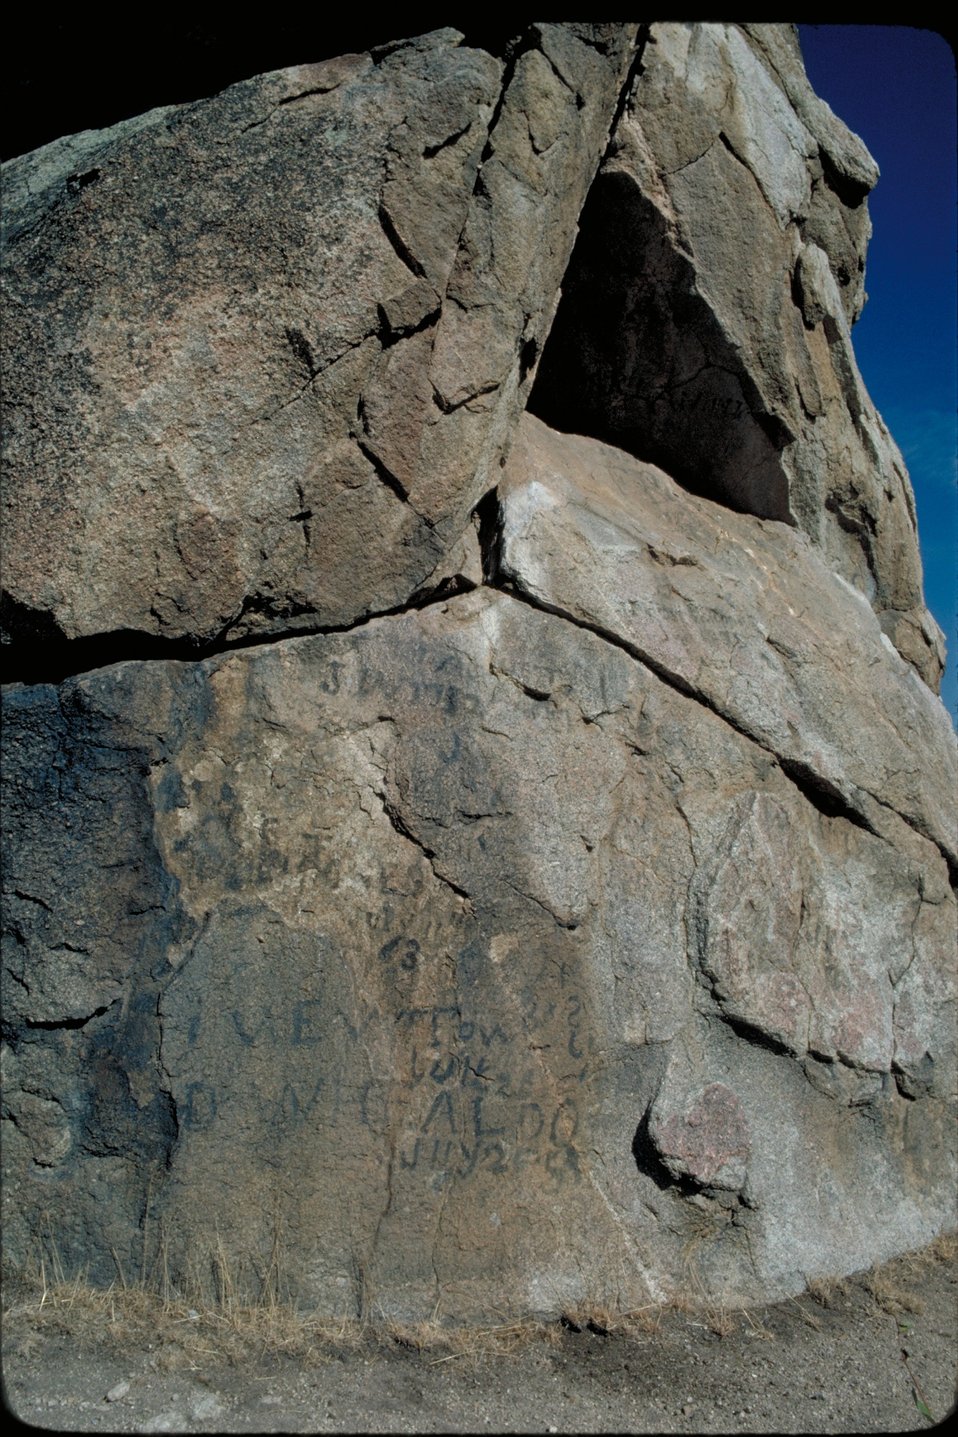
Oregon Trail inscriptions near Ditto Creek Lower Snake River District